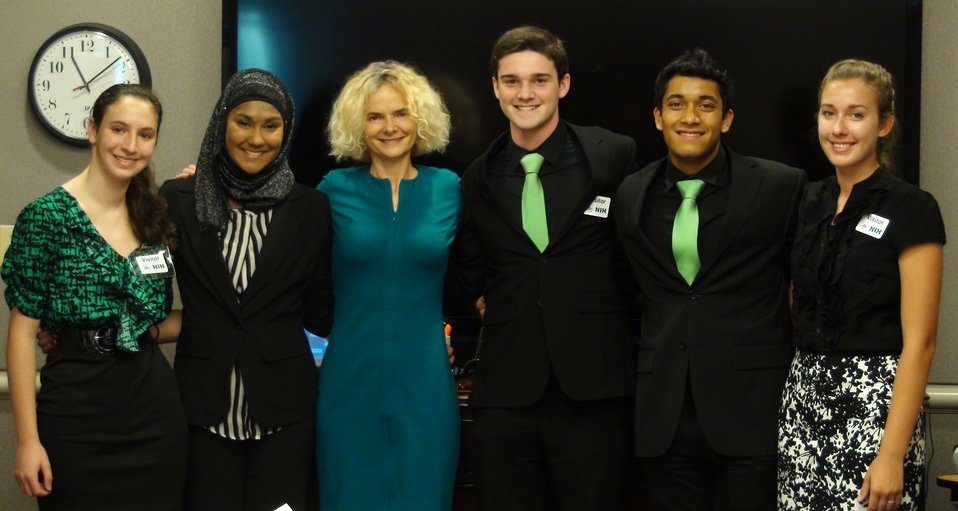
130813-NIDA-ISEF WInners

Intel Addiction Science winners visit NIDA (from left to right) Gili Risak (Honorable Mention,) Zarin Ibnat Rahman (1st Place,) Dr. Volkow, Emory Morris Payne and Zohaib Majaz Moonis (2nd Place,) Alaina Nicole Sonksen (3rd Place)